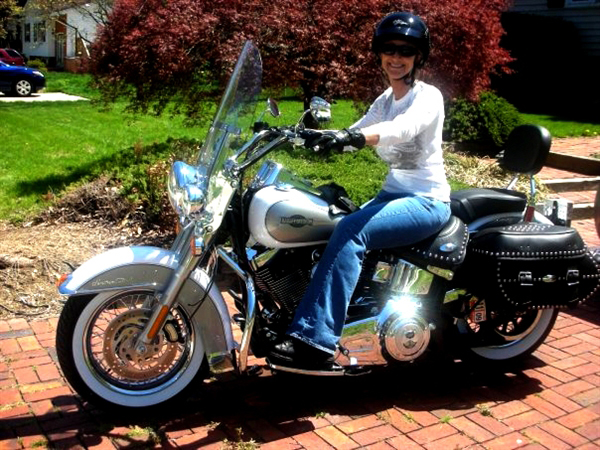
Motorcycle Safety

Col. Dana Morel gets ready for a ride on her 2008 Harley-Davidson Heritage motorcycle in Lorton, Va., December 2008.